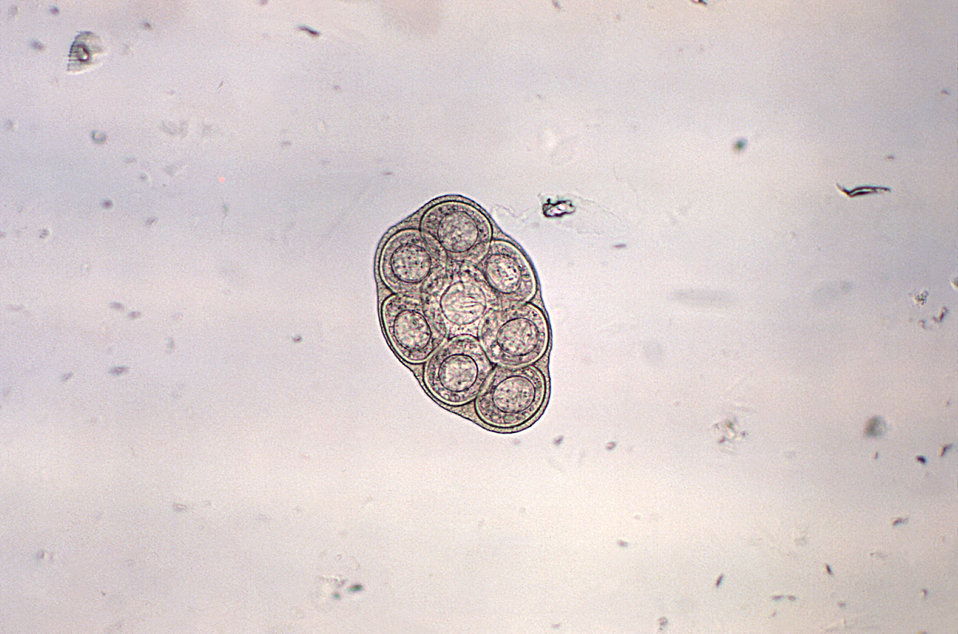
Egg packet of Dipylidium caninum.